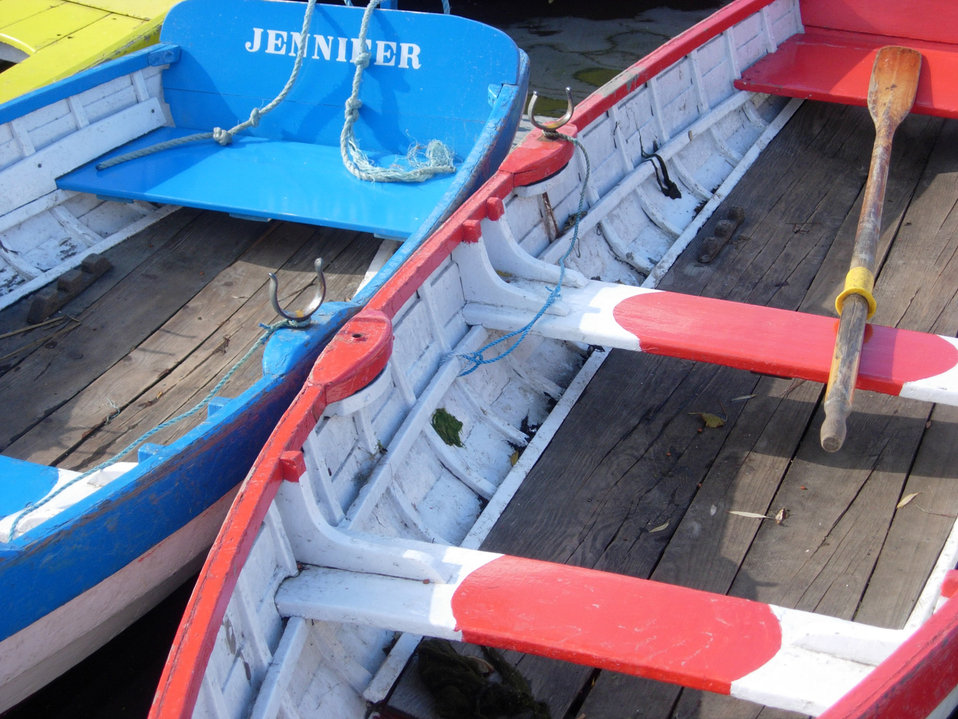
Boats on the meare

Brightly coloured rowing boats on thorpeness meare in suffolk.